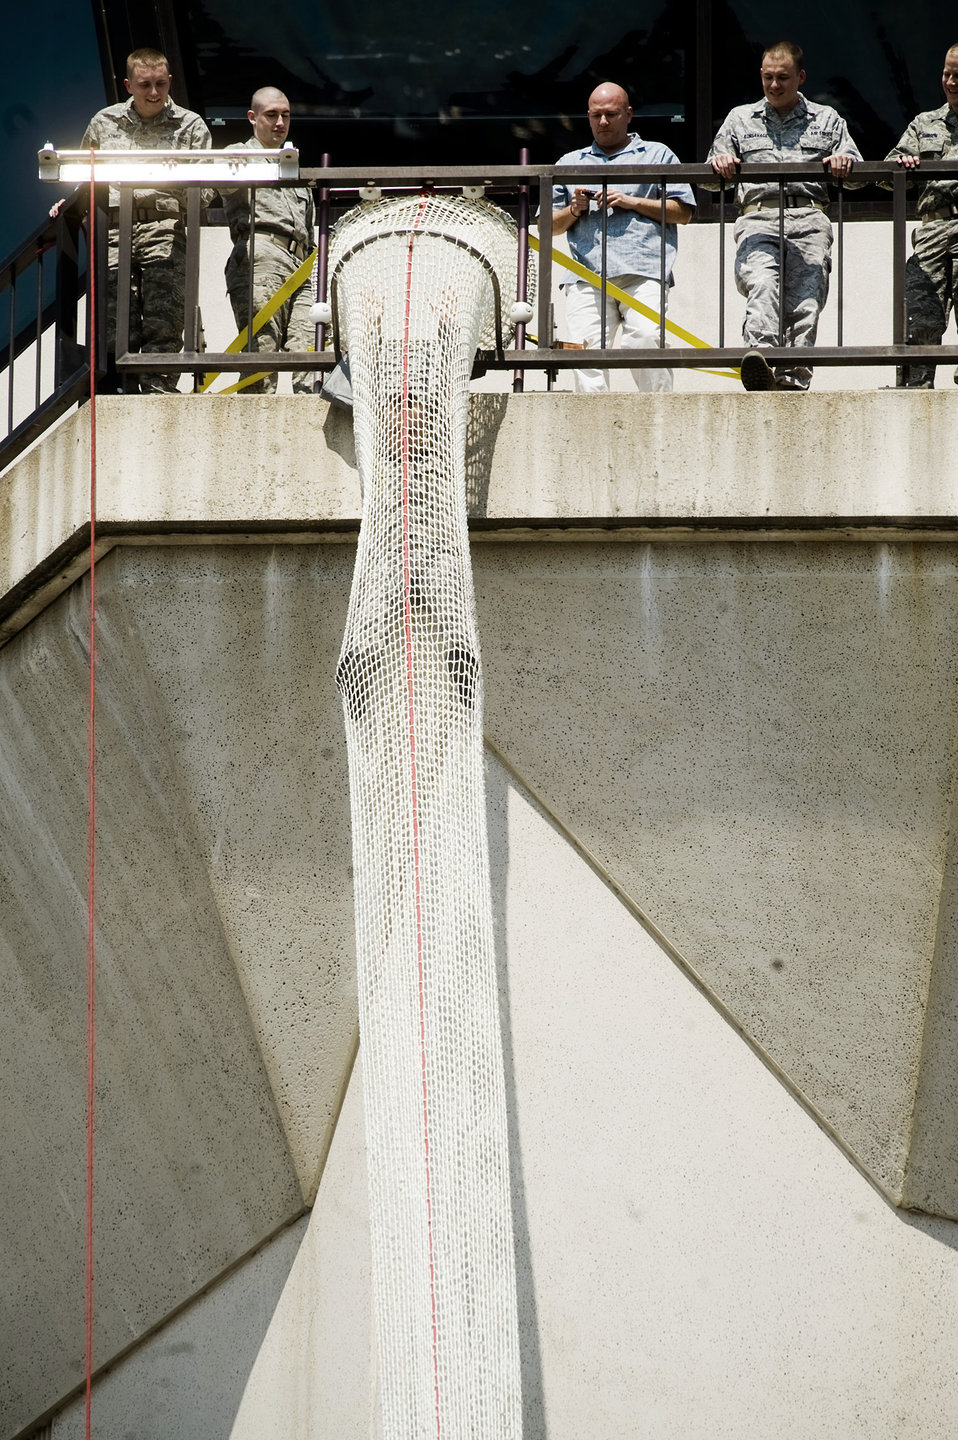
Air traffic controllers practice emergency exit procedures

Airman 1st Class Manuel Bowden begins his descent down the Baker Life Chute while evacuating from the 100-foot control tower Aug. 3, 2010, at Joint Base Lewis McChord, Wash. Airmen Bowden is an air traffic controller with the 62nd Operations Support Squadron.